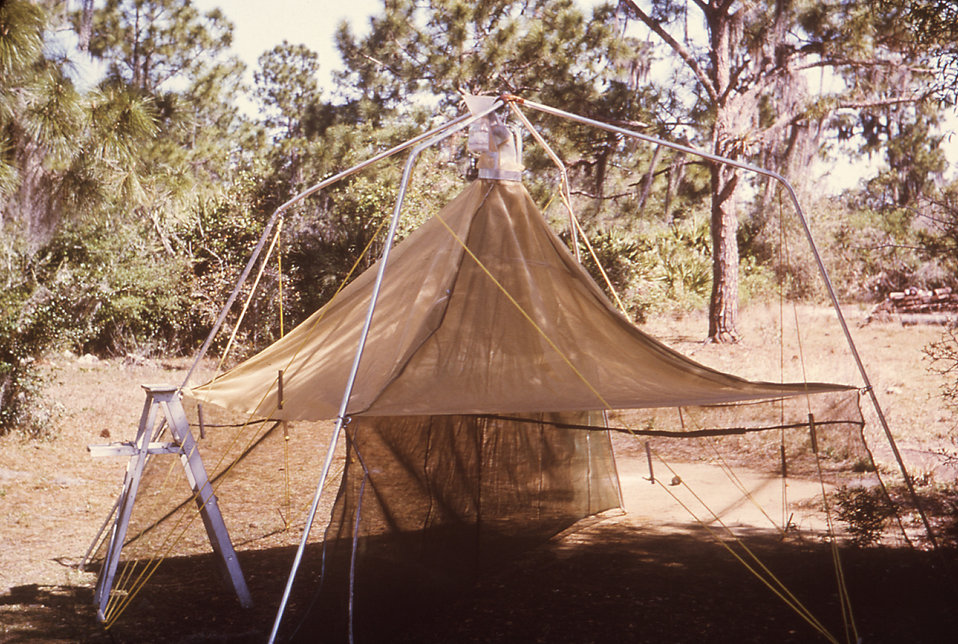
This 1980 photograph depicted an assembled 'Magoon' mosquito tent trap, which allowed mosquitoes to enter in order to feed, but after having fed, were then unable to extricate themselves from the trap.